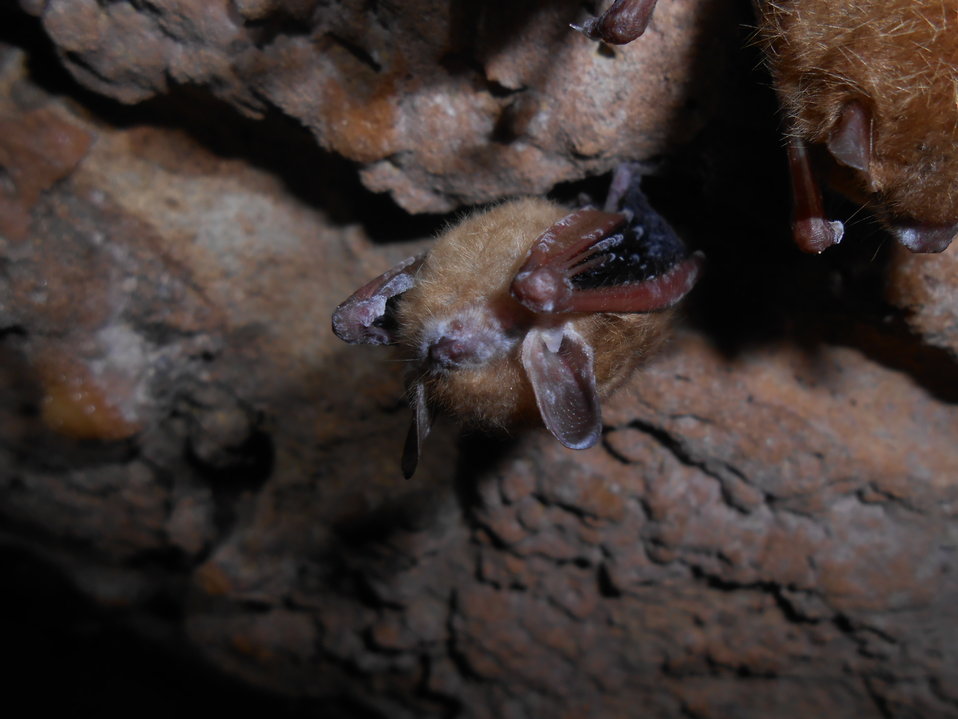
Tri-colored bat with visible symptoms of WNS from Chickamauga and Chattanooga National Military Park, Georgia